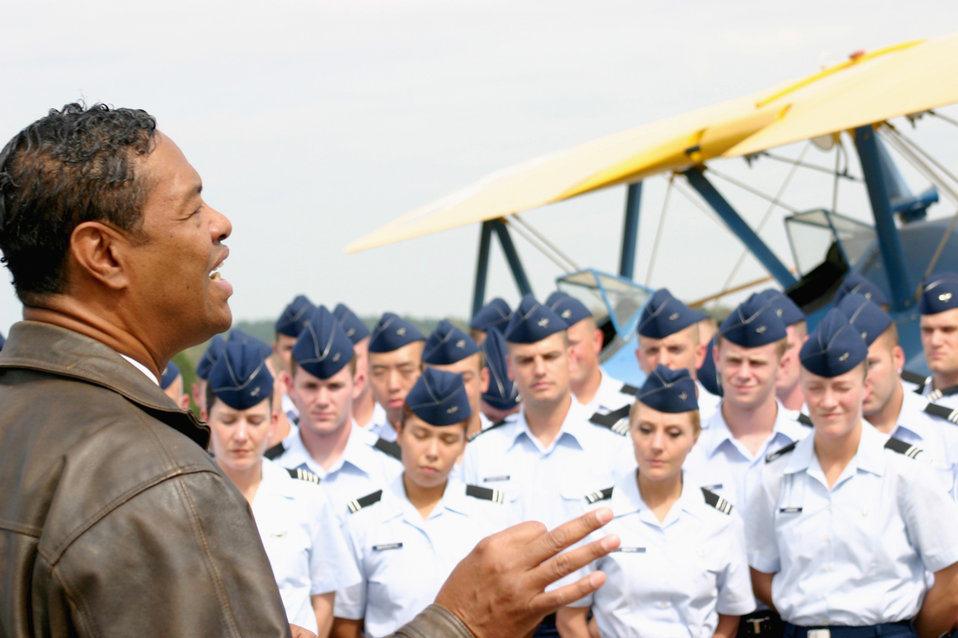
OTS incorporates Tuskegee Airmen into new curriculum

Retired Col. R. J. Lewis, a second generation Tuskegee Airman, speaks with Air Force Officer Training School students Oct. 19 at Robert Moton Field in Tuskegee, Ala. More than 85 officer trainees visited various historic sites in Tuskegee as part of an expanded curriculum to enhance trainees knowledge in the Air Force's history and heritage -- particularly the services' first black aviators, the Tuskegee Airmen.